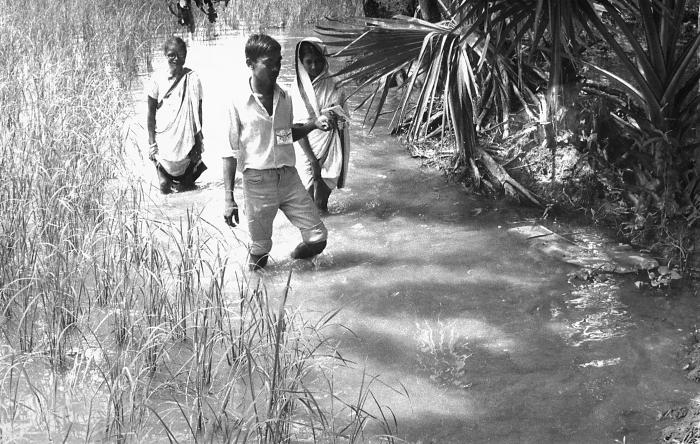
These local smallpox eradication team members were shown here slogging through the village backwaters in their quest to locate any remaining smallpox cases. When a possible case was located, it would subsequently be confirmed as a smallpox case, and it was then entered into the 'Containment Book'. The Containment Book was a ledger, which recorded all of the names of anyone living in, or within one half of a mile from a confirmed smallpox case, and subsequently all those listed were vaccinated against smallpox. Those vaccinated were followed until a 'successful' vaccination was observed.